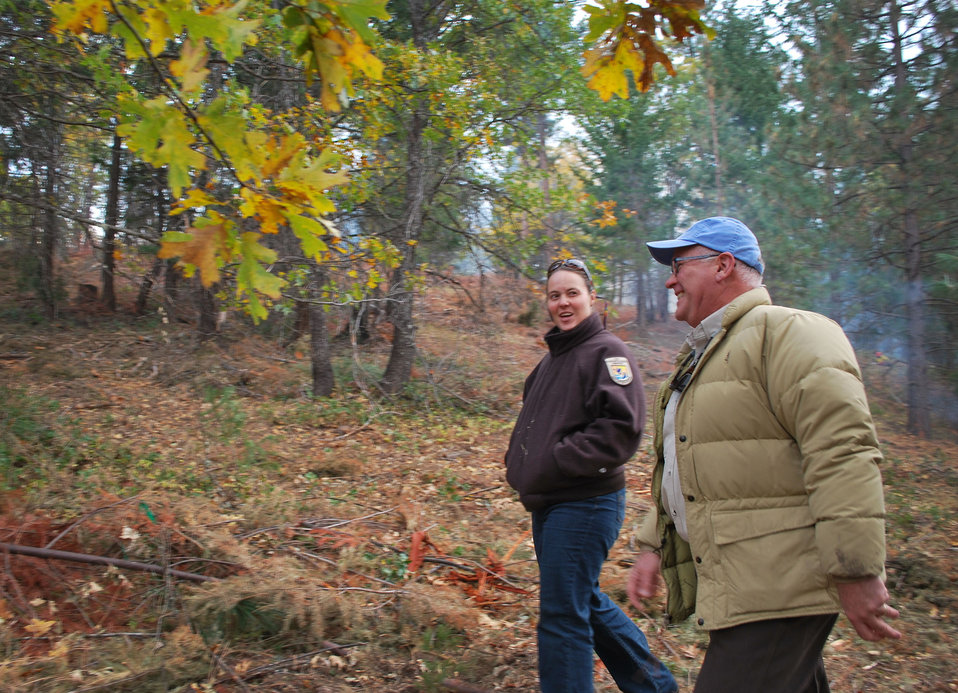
Oak Restoration Partners